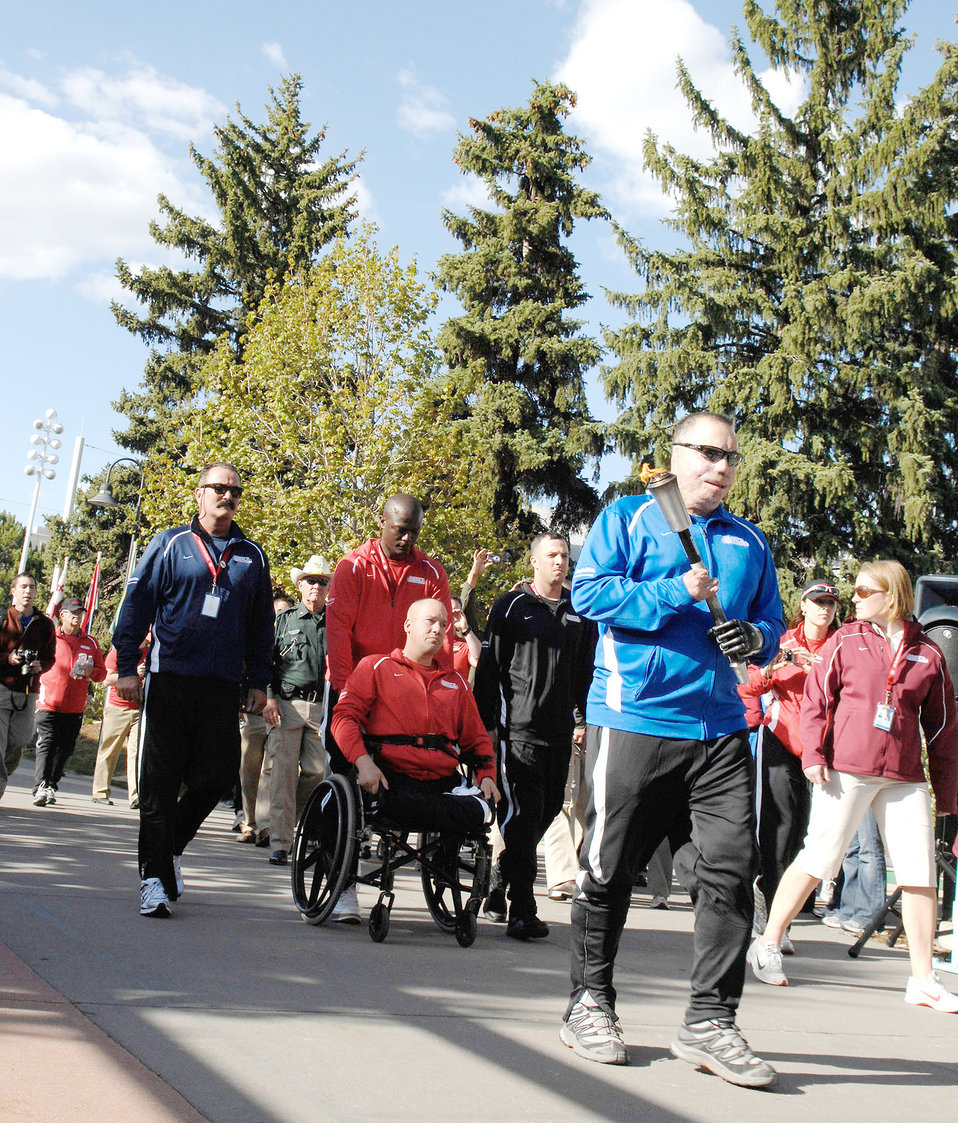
Disabled vets, troops compete in first Warrior Games

Tech. Sgt. Israel Del Toro carries the Warrior Games torch down Olympic Path for the inaugural Warrior Games May 10, 2010, at the U.S. Olympic Training Center in Colorado Springs, Colo. Sergeant Del Toro is one of some 200 disabled veterans participating in the Paralympic-style competition May 10 through 14.